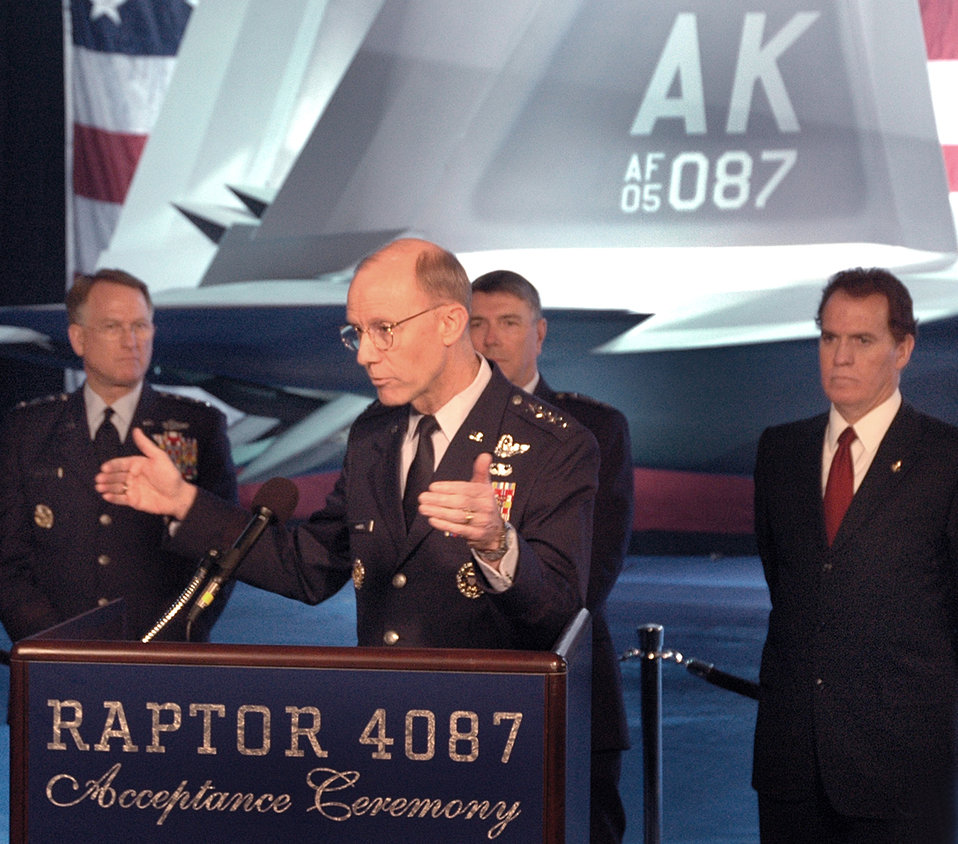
First F-22 bound for Pacific unveiled

Gen. John D.W. Corley, the vice chief of staff from Headquarters U.S. Air Force, speaks during the acceptance ceremony for Pacific Air Force's first F-22 Raptor Feb. 12 at Marietta, Ga. This F-22 is the first of several that will be assigned to PACAF at Elmendorf Air Force Base, Alaska. The F-22 aerodesign, advanced flight controls, thrust vectoring, and high thrust-to-weight ratio provide the capability to outmaneuver all current and projected aircraft.